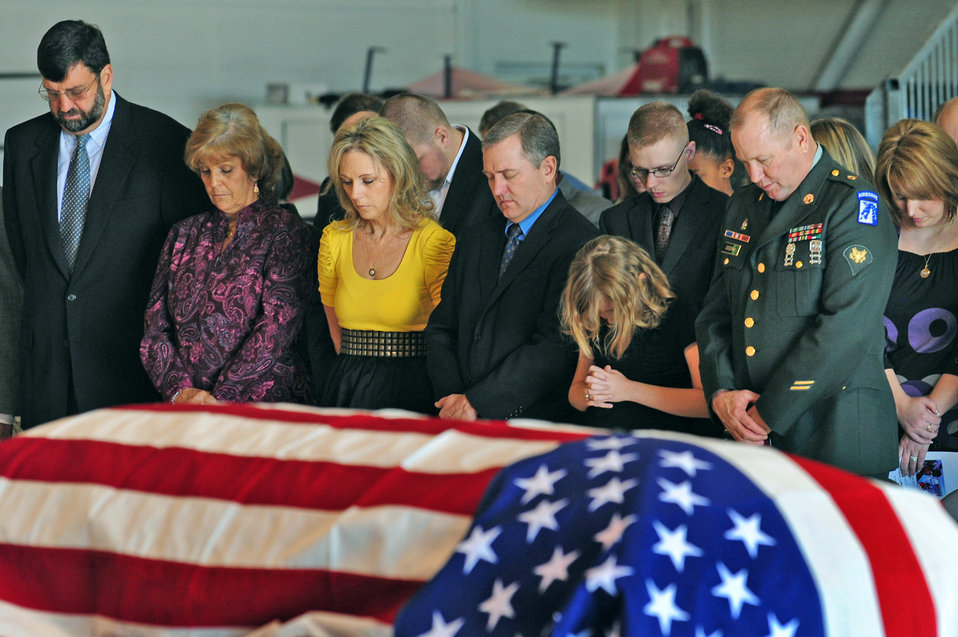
Thunderbird returns to Nellis for final farewell

Friends and family of Maj. Russell Goodman pray during the funeral service held inside the Thunderbird hanger Jan. 14, 2010, at Nellis Air Force Base, Nev. Major Goodman served as the narrator for the Air Force Thunderbirds from 1964 to 1965 and was declared missing in action after his aircraft was hit by a surface-to-air missile in February 1967 while on a combat mission over North Vietnam.